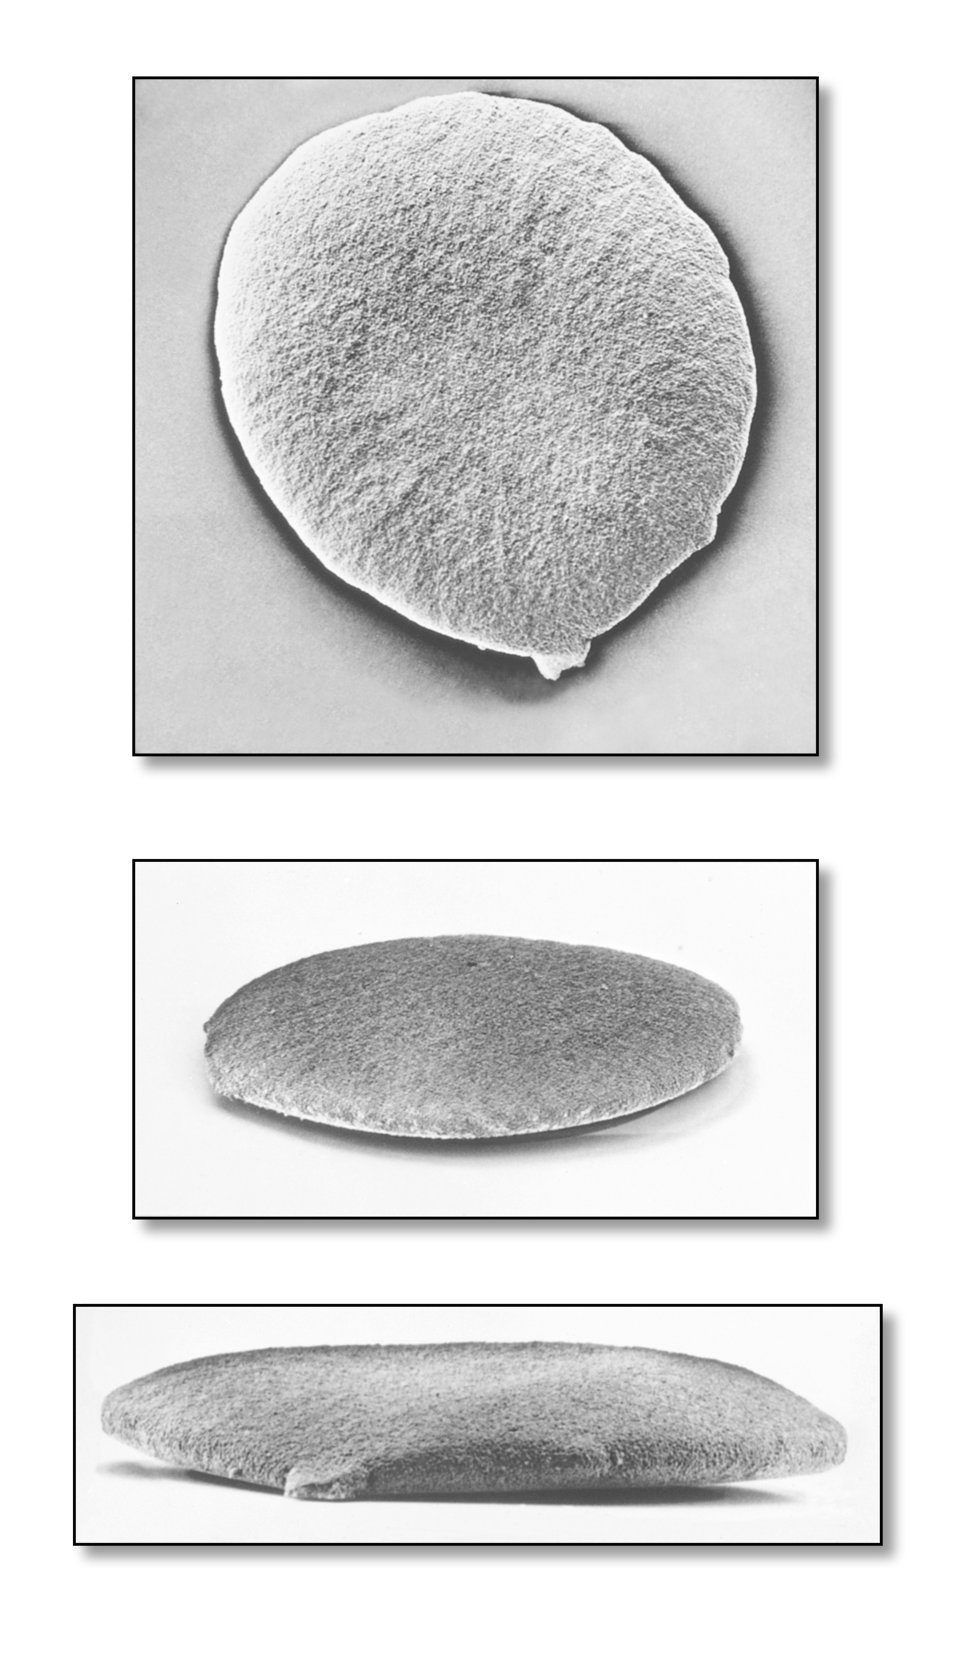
This scanning electron micrograph (SEM) depicted three views of a single Gram-negative Neisseria gonorrhoeae bacterium. Under this highly-magnified view, the 'roughened' texture of the bacterium's cell wall is made visible. As a Gram-negative bacterium, N. gonorrhoeae possess a thinner cell wall than its Gram-positive cousins, composed of peptidoglycan molecular layers that are sandwiched between a lipid membrane layer.